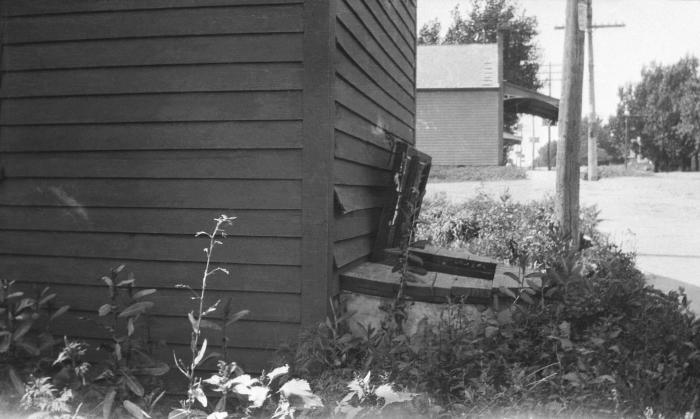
This 1915 historic image revealed the surface conditions around a municipal 'dug' well in Balaton, Minnesota. The descriptive information accompanying the photograph also referred to a governmental publication on the sanitation facilities observed by state public health inspectors. The specific citation was, 'Minnesota State Board of Health. Division of Sanitation. Report on the Investigation of the Water Supply of Balaton, Report no. 78, Investigation 108, 1915'. The description also stated that the image was labeled as File plate no. 94.